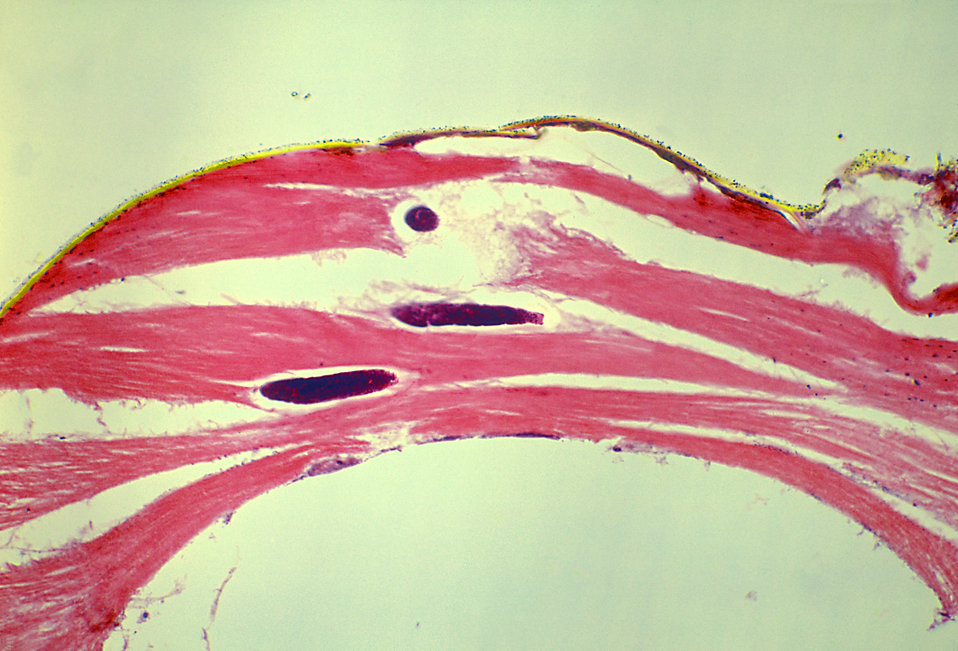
A photomicrograph revealing the histology of Onchocerca volvulus developing in a Black Fly, Simulium ochraceum.